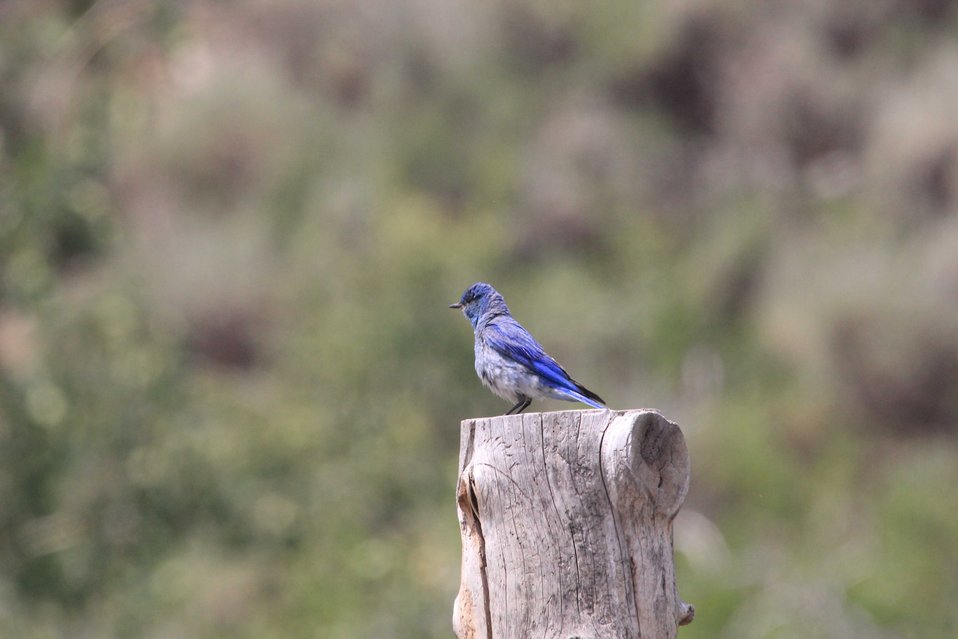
A Spot of Blue

A Mountain Bluebird sits on a post on the National Elk Refuge. A common sight in open areas of the American West, Mountain Bluebirds are recognizable by their brilliant blue color.

Credit: USFWS / BJ Baker, National Elk Refuge volunteer